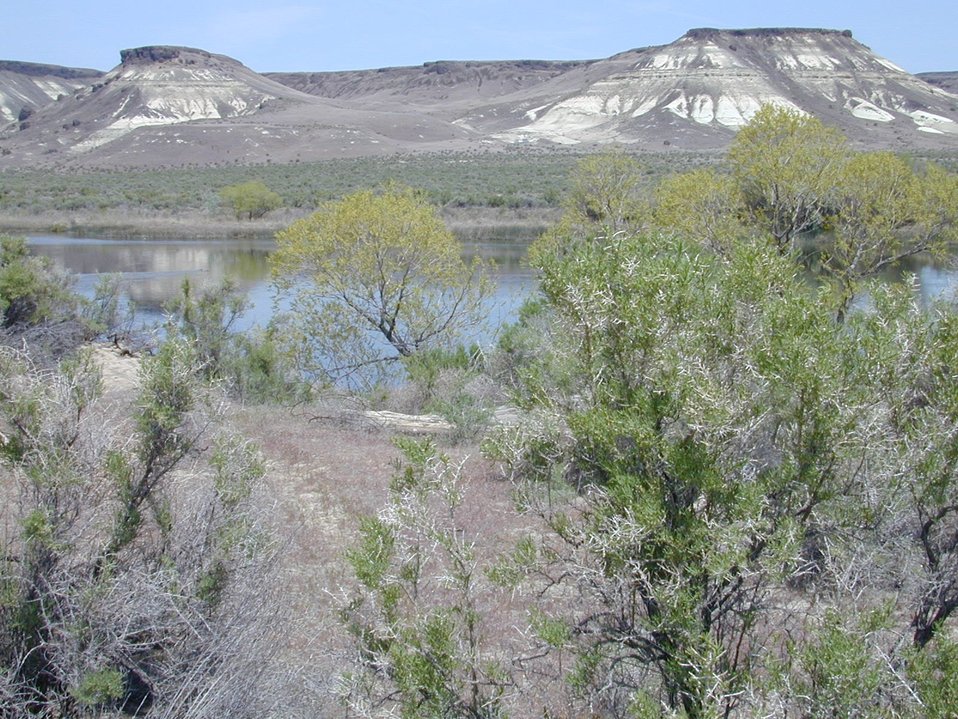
Environmental Education Fire Workshop Timberline High School Fall 2000